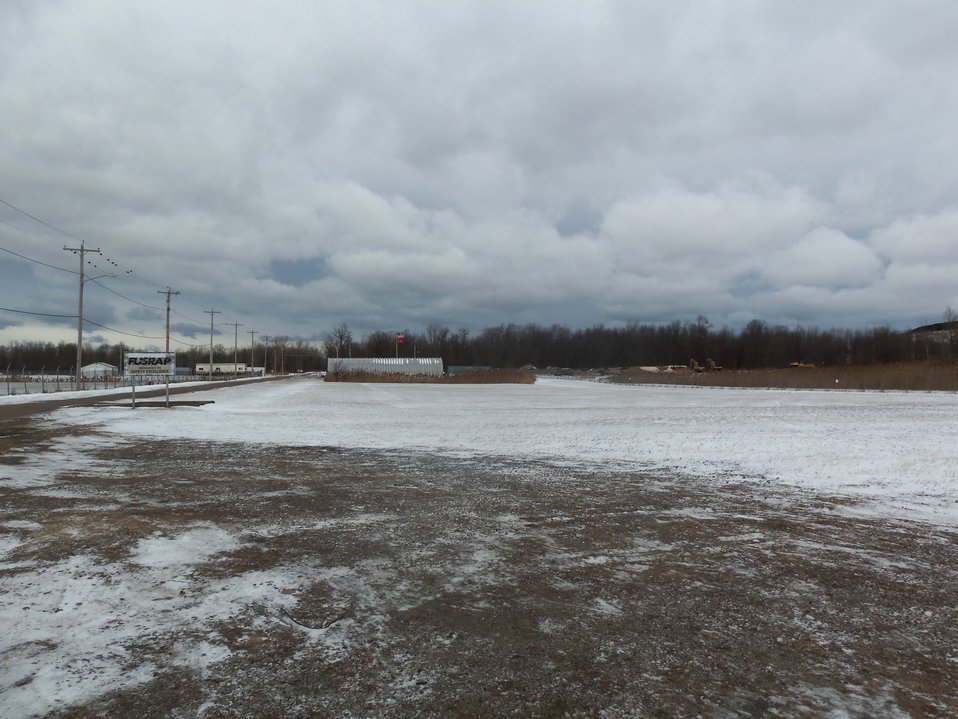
Photo of area where Building 401 stood.
Activities from the Niagara Falls Storage Site, which is associated with the former Lake Ontario Ordnance Works. Formerly Utilized Sites Remedial Action Program (FUSRAP), a program initiated in 1974 to identify, investigate and clean up or control sites that were part of the Nation's early atomic energy and weapons program. Activities at the sites that are eligible for FUSRAP were conducted by Manhattan Engineer District (MED) or the Atomic Energy Commission (AEC), both predecessors of the Department of Energy (DOE). The U.S. Army Corps of Engineers was assigned management of FUSRAP by Congress in 1997.